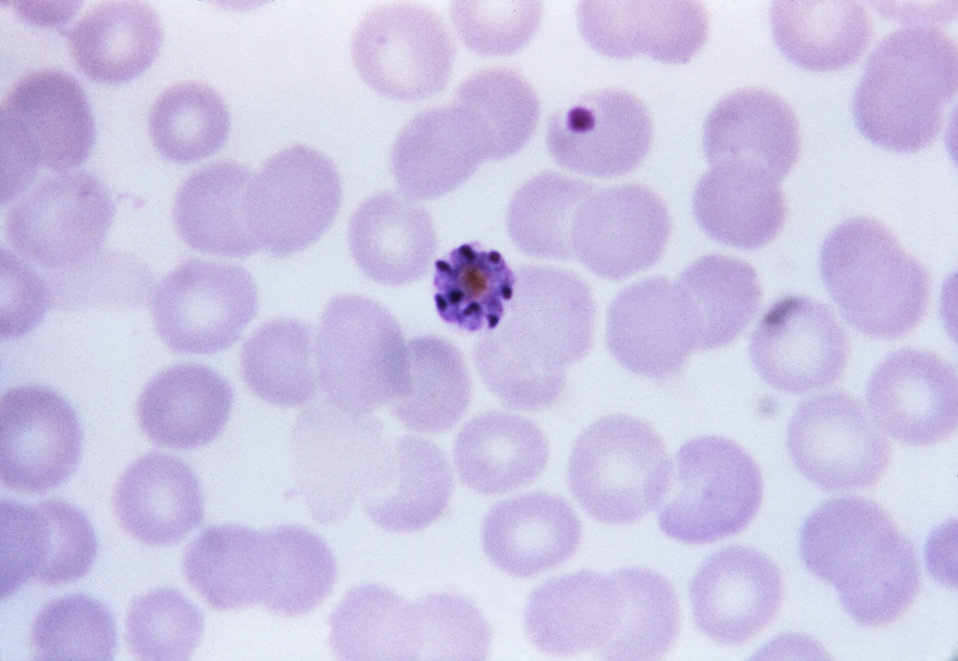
This thin film Giemsa stained micrograph depicts an immature Plasmodium vivax schizont.